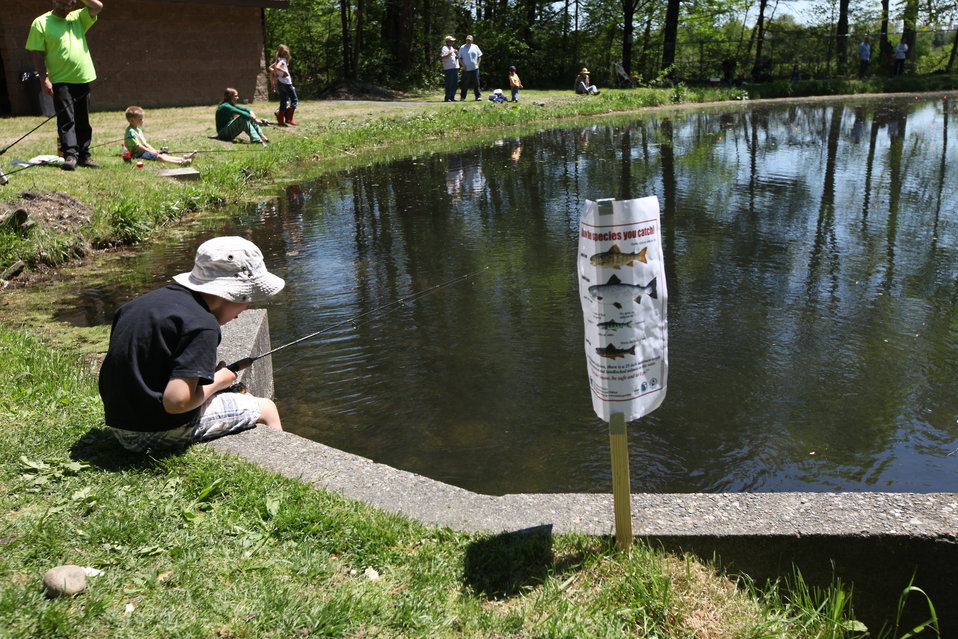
Youth Fishing Derby 2012

Megan Nagel/USFWS